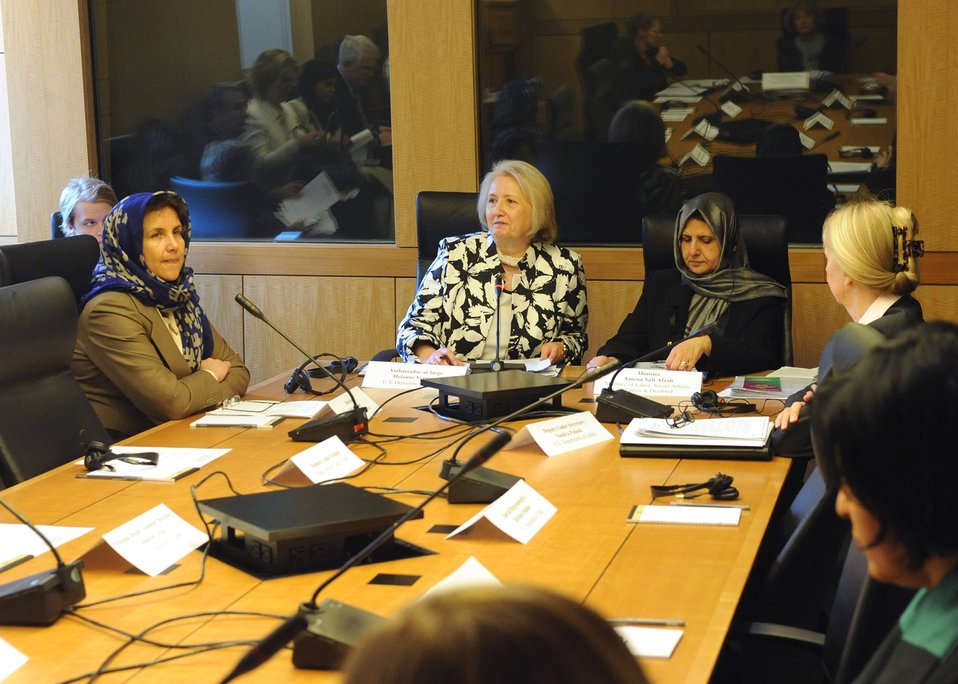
Social Issues and Women's Rights Interagency Working Group Session of the U.S.-Afghanistan Strategic Partnership Dialogue

U.S. Ambassador-at-Large Melanne Verveer and U.S. Department of Labor Under Secretary Sandra Polaski, and Afghan Ministry of Labor, Social Affairs, Martyrs and Disabled Afzali meet during the Social Issues and Women's Rights Interagency Working Group Session of the U.S.-Afghanistan Strategic Partnership Dialogue at the U.S. Department of State, Washington, D.C., May 11, 2010.